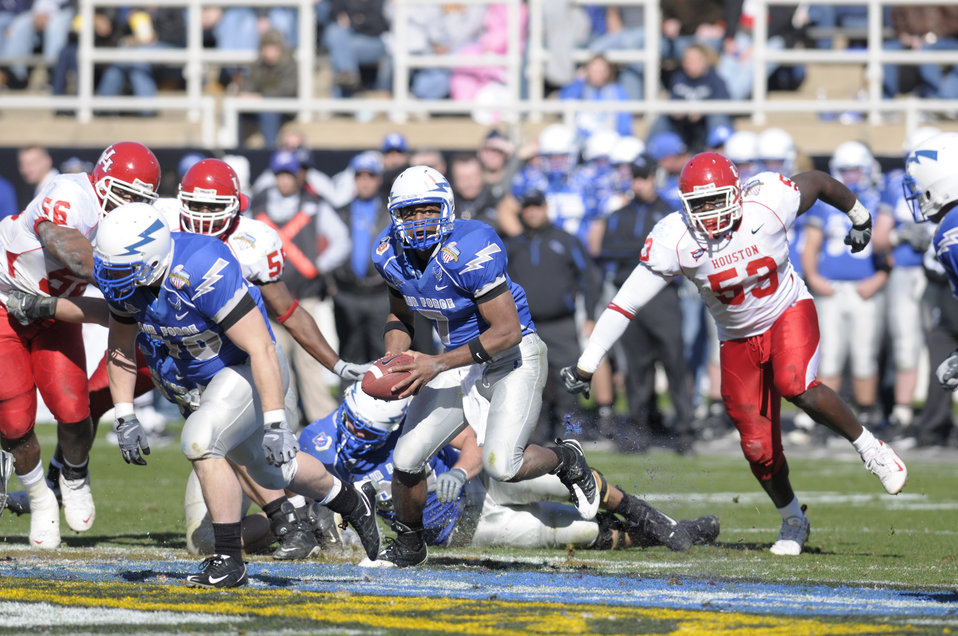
Air Force falls to Houston at Armed Forces Bowl, 34-28

Under pressure, U.S. Air Force Academy quarterback Tim Jefferson looks to pitch the ball to a running back during the sixth annual Bell Helicoptor Armed Forces Bowl Dec. 31. The Academy set a new Armed Forces Bowl game rushing yardage record, running 67 times for 243 yards, but fell short of beating the University of Houston Cougars, 34-28.